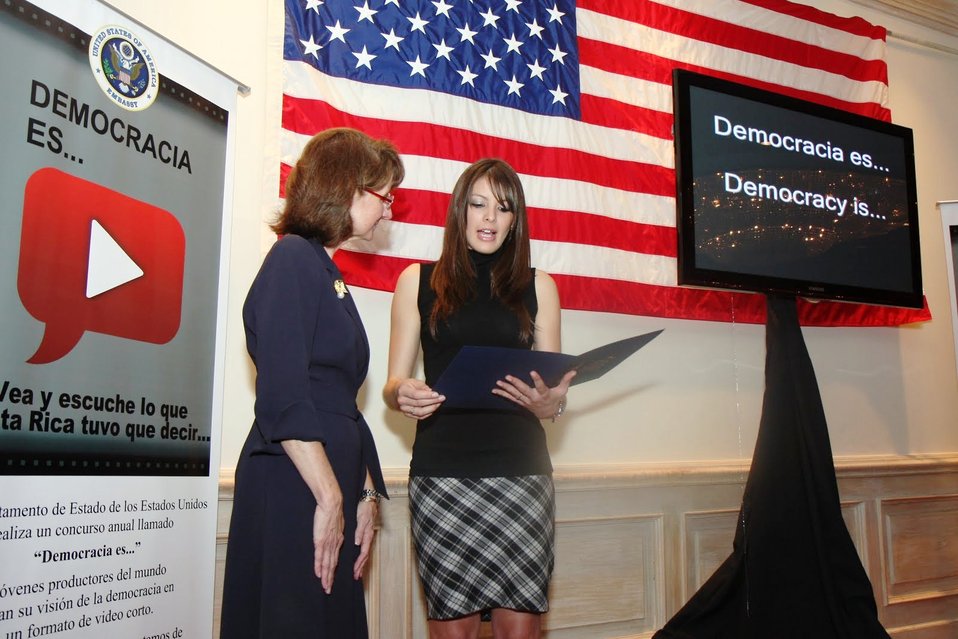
Ambassador Andrew Speaks With a Democracy Video Challenge Participant

U.S. Ambassador to Costa Rica Anne Slaughter Andrew speaks with a participant in the 2009 and 2010 Democracy Video Challenge during the U.S. Embassy San Jose in Costa Rica’s U.S. Independence Day celebration on July 2, 2010, at the Hotel Intercontinental in Escazu, Costa Rica.